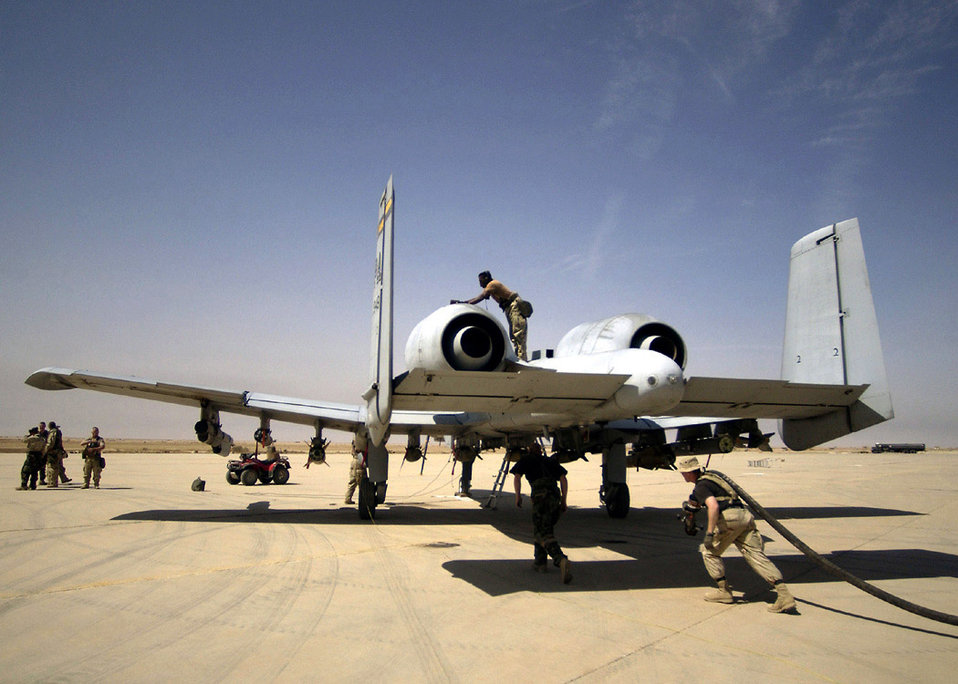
Feb 23 airpower summary: maintainers keep them flying

392nd Air Expeditionary Wing aircraft maintenance personnel inspect and refuel an A-10 Thunderbolt II aircraft at a forward-deployed location in Southern Iraq in support of Operation Iraqi Freedom.